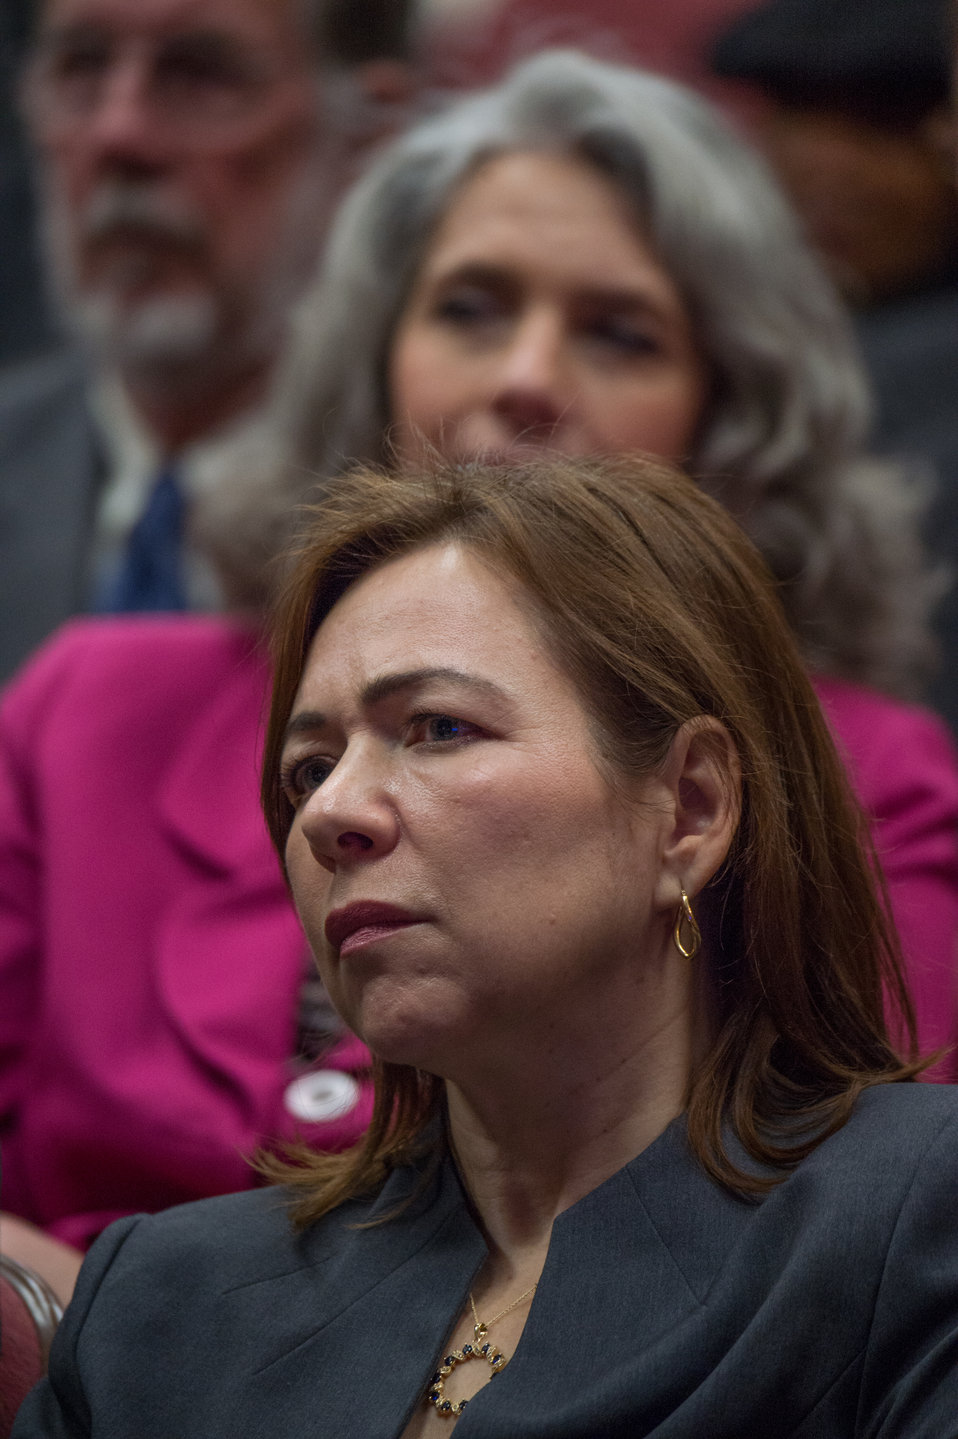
Members of the audience at the 2013 Secretary's Honor Awards ceremony held in the Jefferson Auditorium at the U.S. Department of Agriculture (USDA) in Washington, D.C. on Wednesday, Dec. 11, 2013.